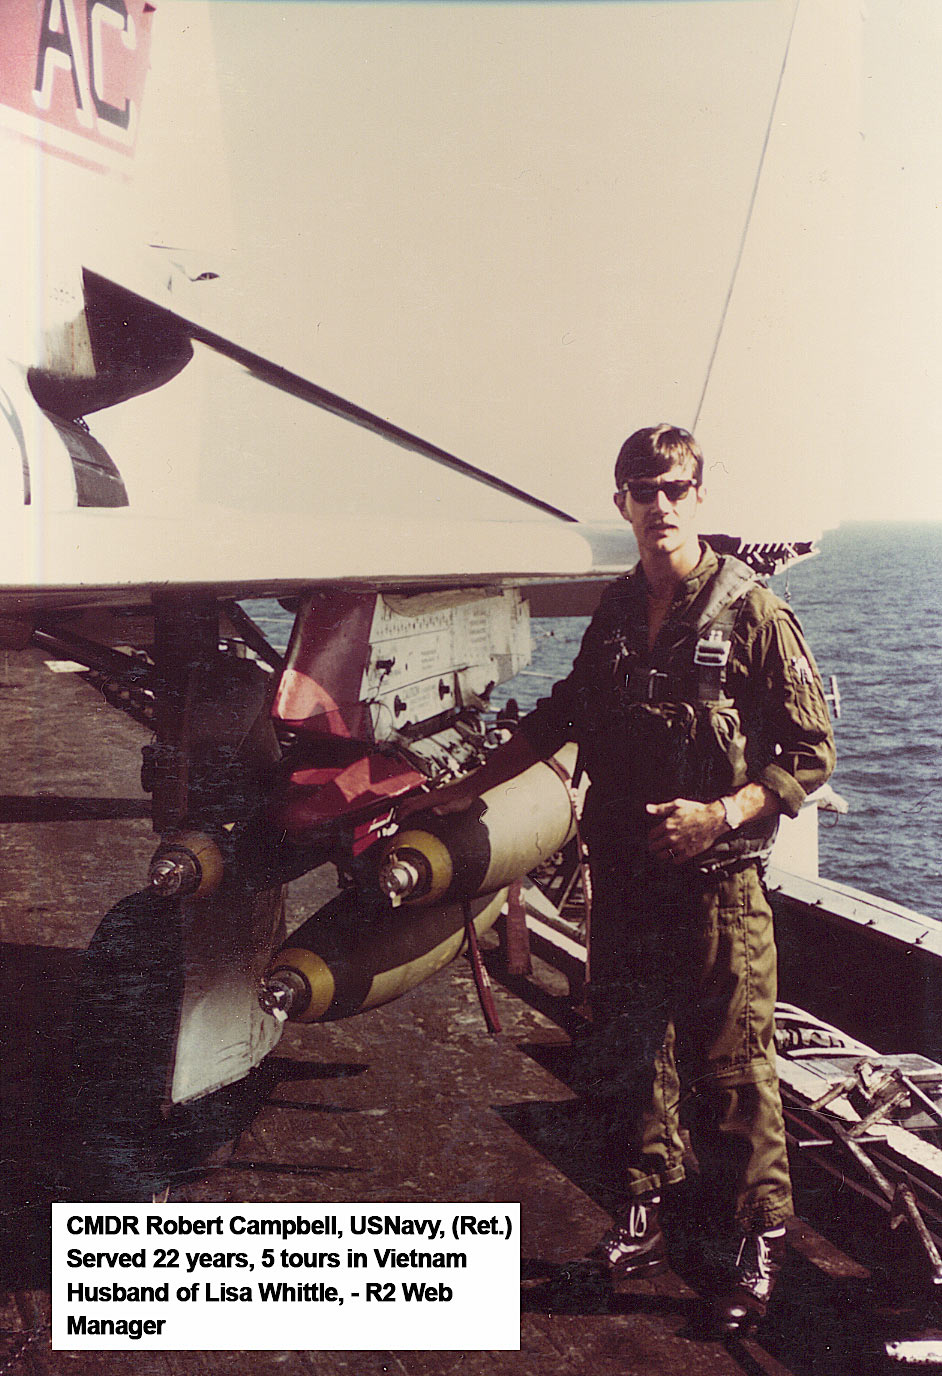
Robert Campbell -- Southwest Region

Robert Campbell, the husband of the Southwest Region’s web manager Lisa Whittle served five tours in Vietnam.